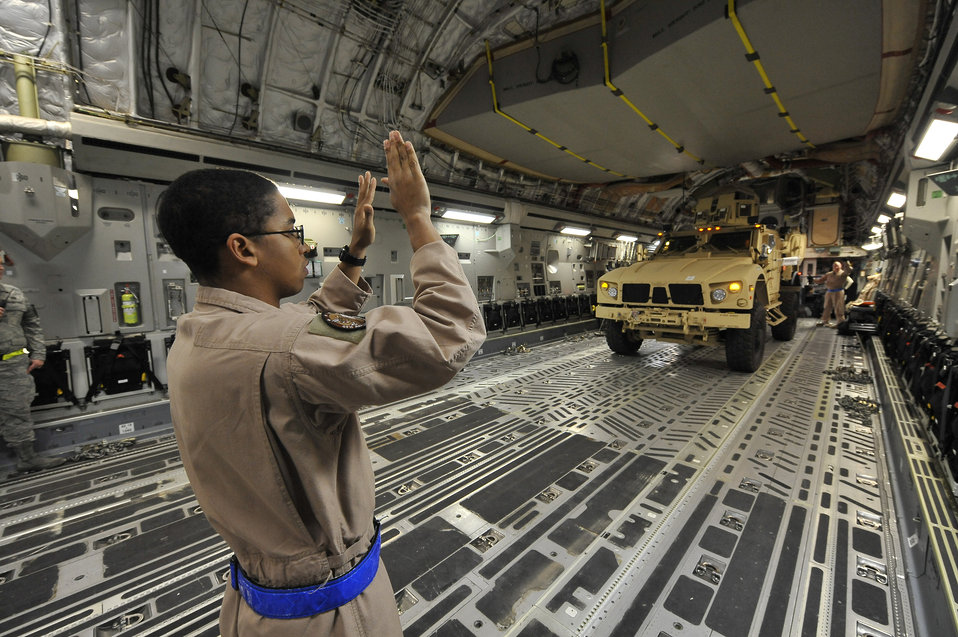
MATV load C-17

Senior Airman Robert Clark marshals one of two mine-resistant, ambush-protected all-terrain vehicles, or M-ATVs, onto a C-17 Globemaster III at Charleston Air Force Base, S.C., Sept. 30, 2009. Airman Clark is a loadmaster with the 4th Airlift Squadron from McChord AFB, Wash. The two M-ATVs are the first to be delivered to the Afghanistan theater for operational use. The C-17 is based out of McChord AFB.